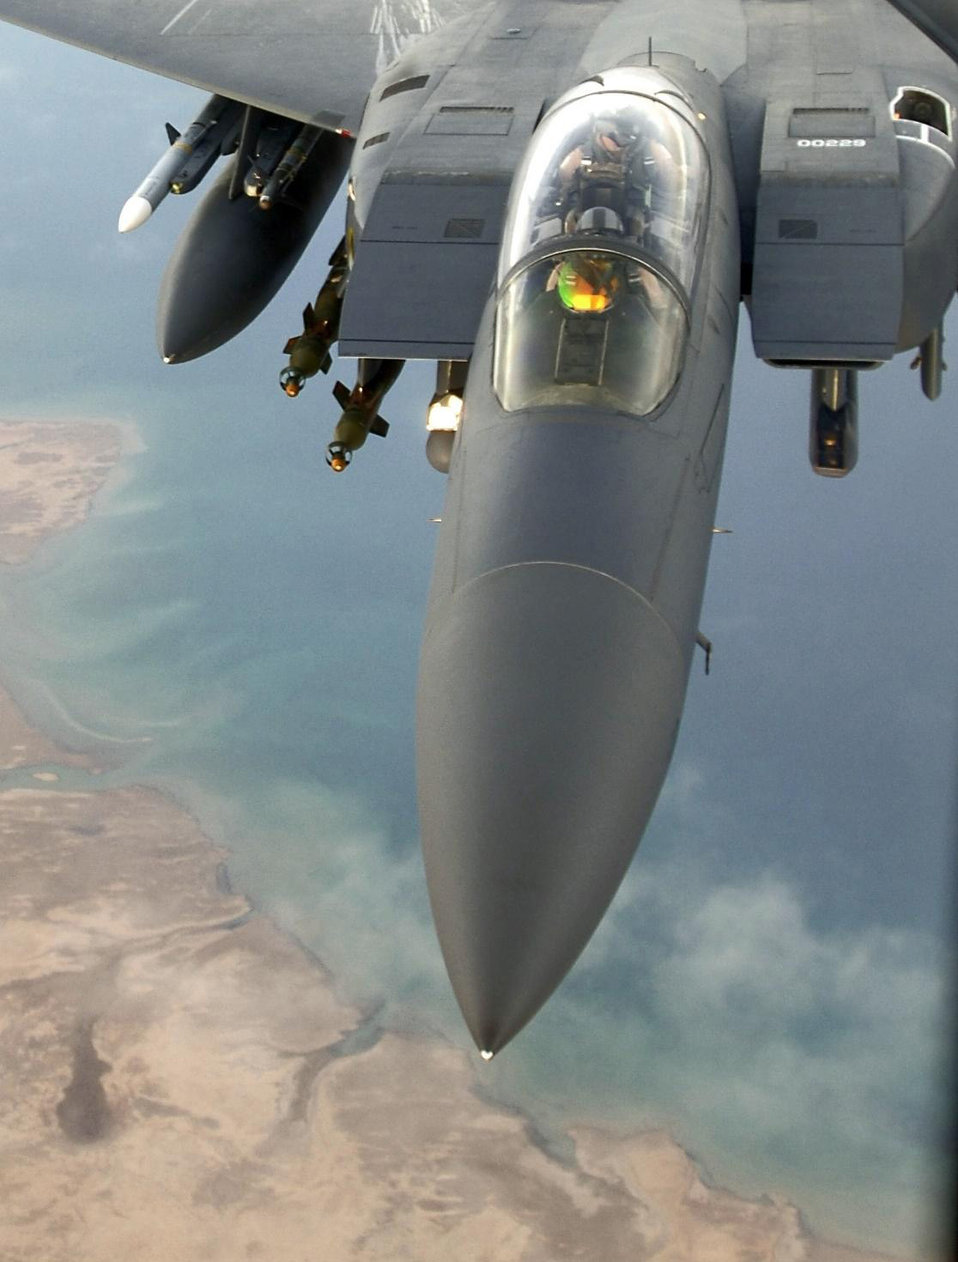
Monitoring the battlespace

An F-15E Strike Eagle flies over a forward-deployed location in Southwest Asia. Aircraft like this are capable of monitoring battlespace with their targeting pods. This concept is known as non-traditional intelligence, surveillance and reconnaissance.